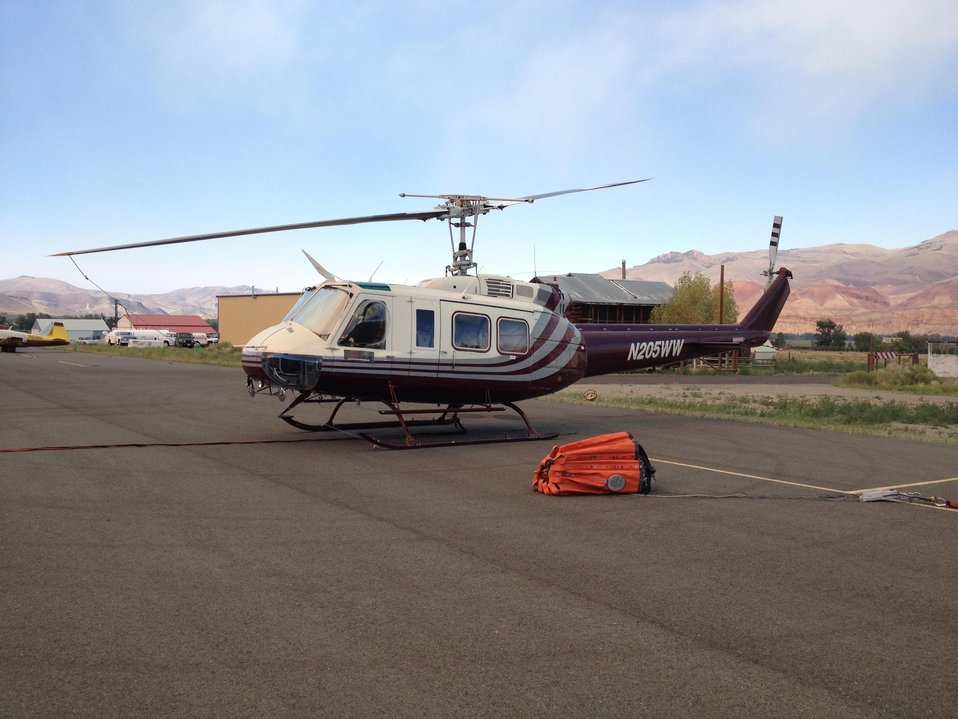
Type 2 helicopter with bucket waits at air base to assist in fighting the Lodgepole Fire. The Lodgepole Fire in the Salmon-Challis National Forest near Challis, ID began on Jul. 20, 2013 by lightning has consumed approximately 13,700 acres and is approximately 15% contained.